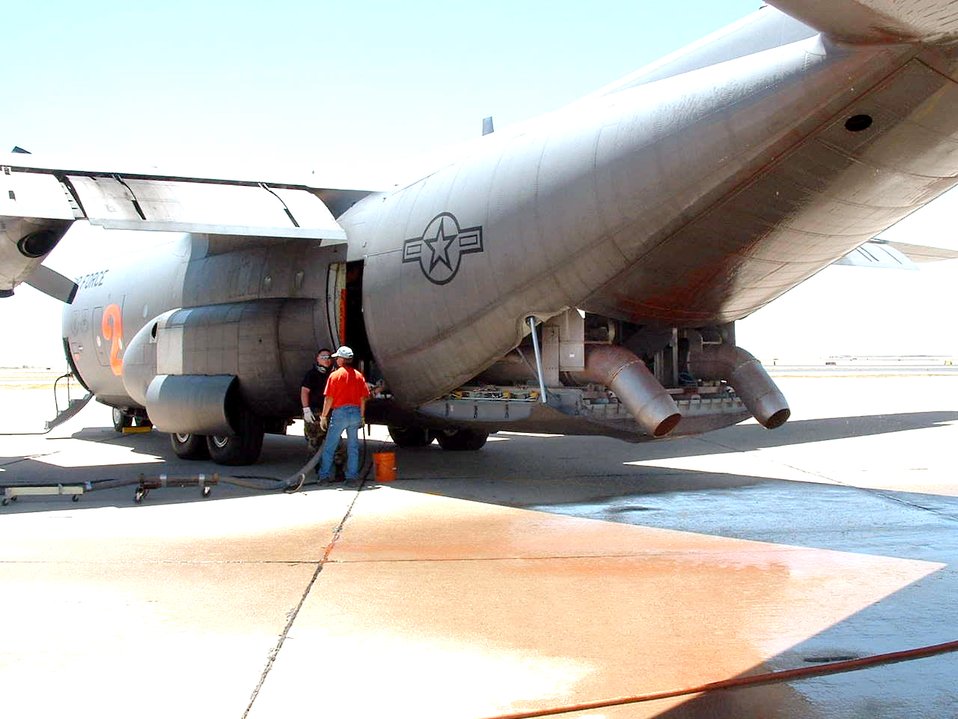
Reservists ready to fight wildfires in Pacific Northwest

Air Force Reserve aircrews and maintainers stand ready to fight wildfires using C-130 Hercules equipped with modular airborne firefighting systems, similar to this one. The aircraft can drop up to 3000 gallons of retardant covering an area one-quarter of a mile long and 60 feet wide.